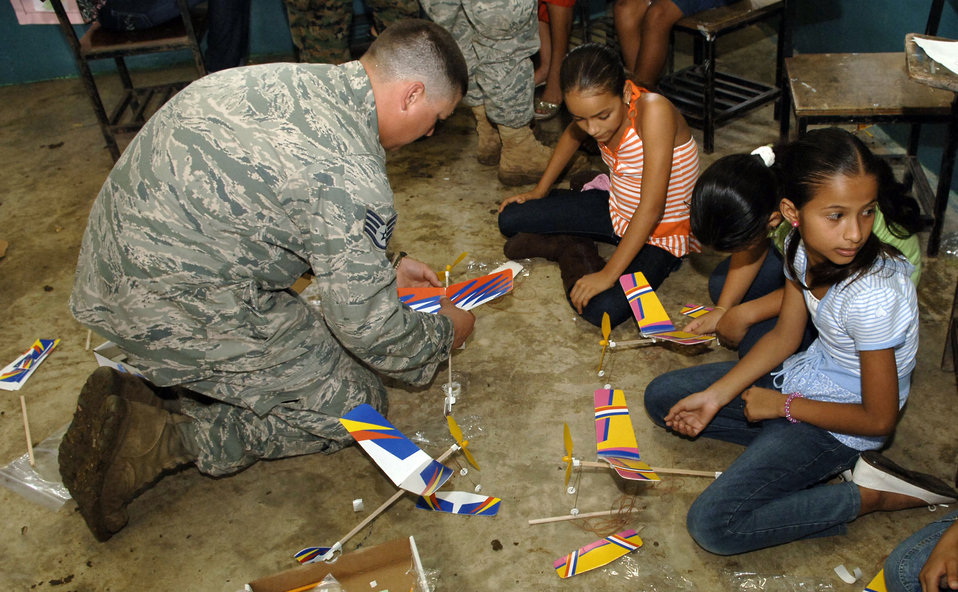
New Horizons Airmen spend day at Panamanian school

Staff Sgt. Josh Lazarski helps children assemble rubber band airplanes July 12, 2010, at the Sansonsito School in Panama. Sergeant Lazarski is assigned to the 820th Expeditionary RED HORSE Squadron.